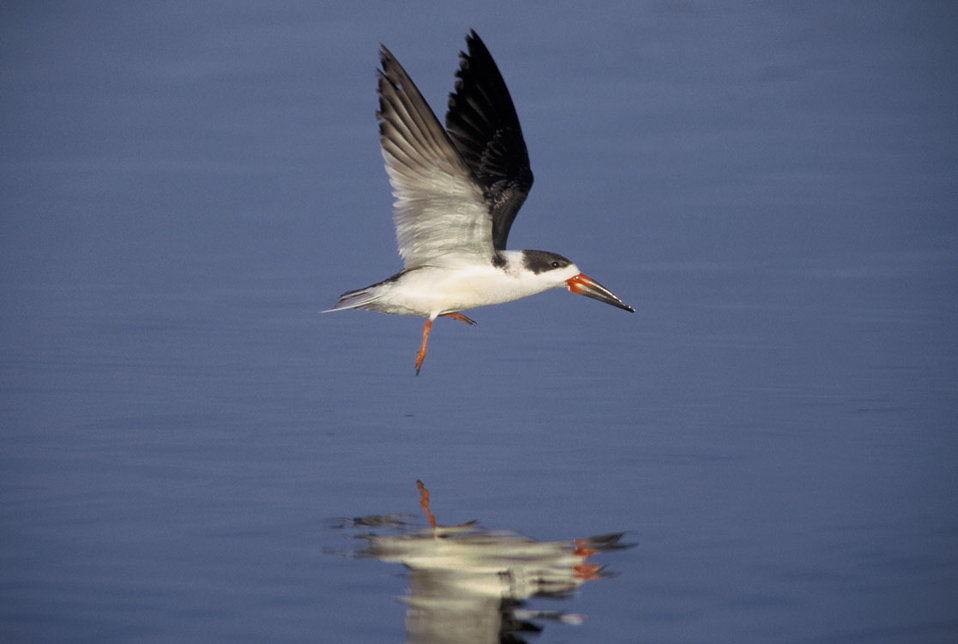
Black skimmer flying low over calm waters.